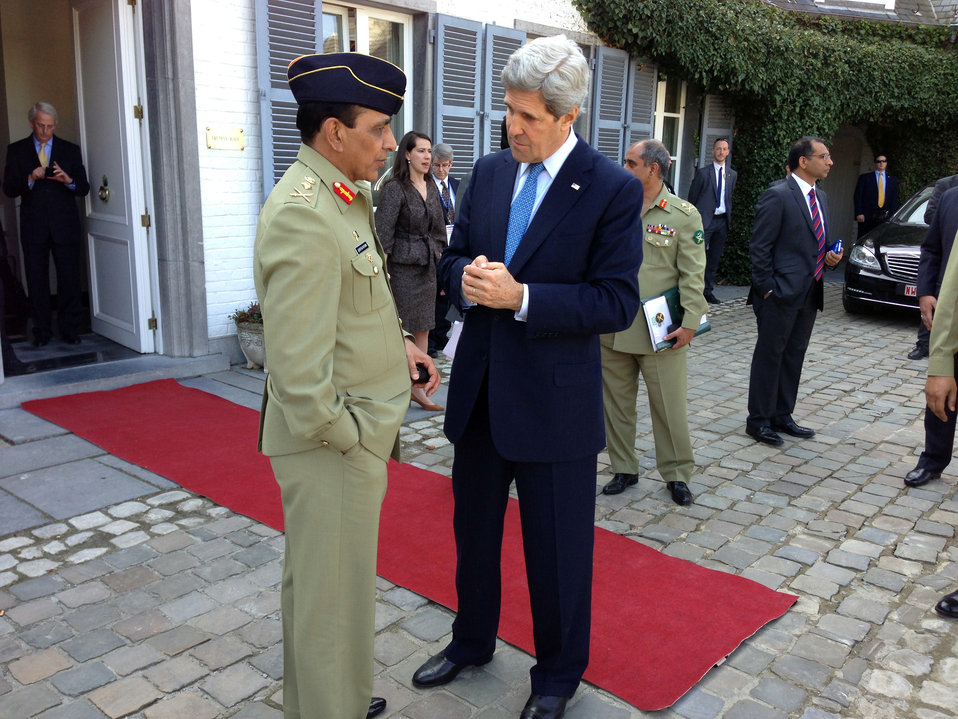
Secretary Kerry Bids Farewell to Pakistani Chief of Army Staff General Kayani

U.S. Secretary of State John Kerry bids farewell to Pakistani Chief of Army Staff General Ashfaq Kayani after their trilateral meeting with Afghan President Hamid Karzai in Brussels, Belgium, on April 24, 2013.